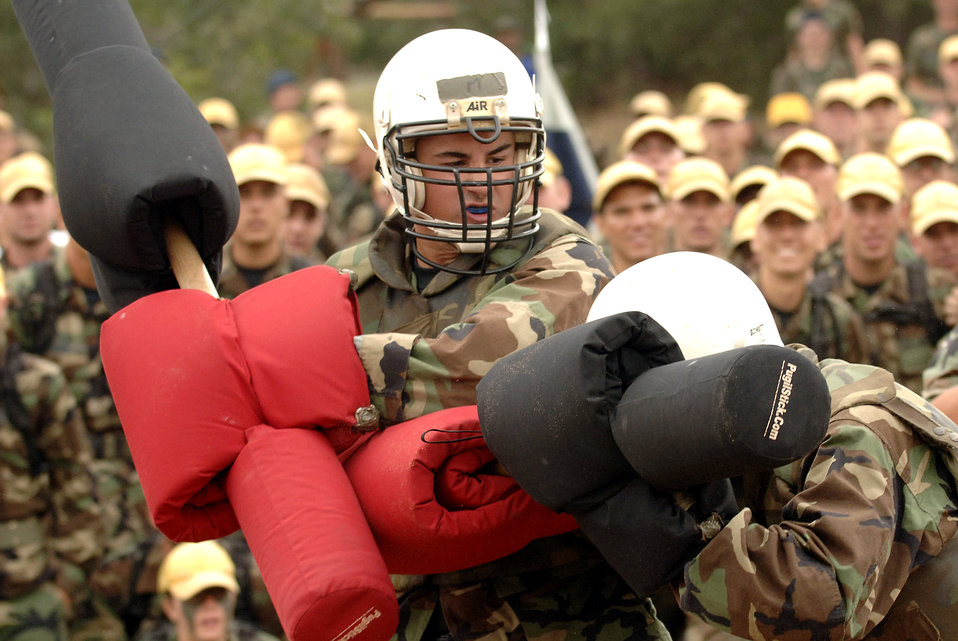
Academy cadets vie to become 'Big Bad Basic'

Academy basic cadet trainees Griffin Biscone (left) and Lawrance Franklin battle it out July 28 at the U.S. Air Force Academy, Colo., for the title of